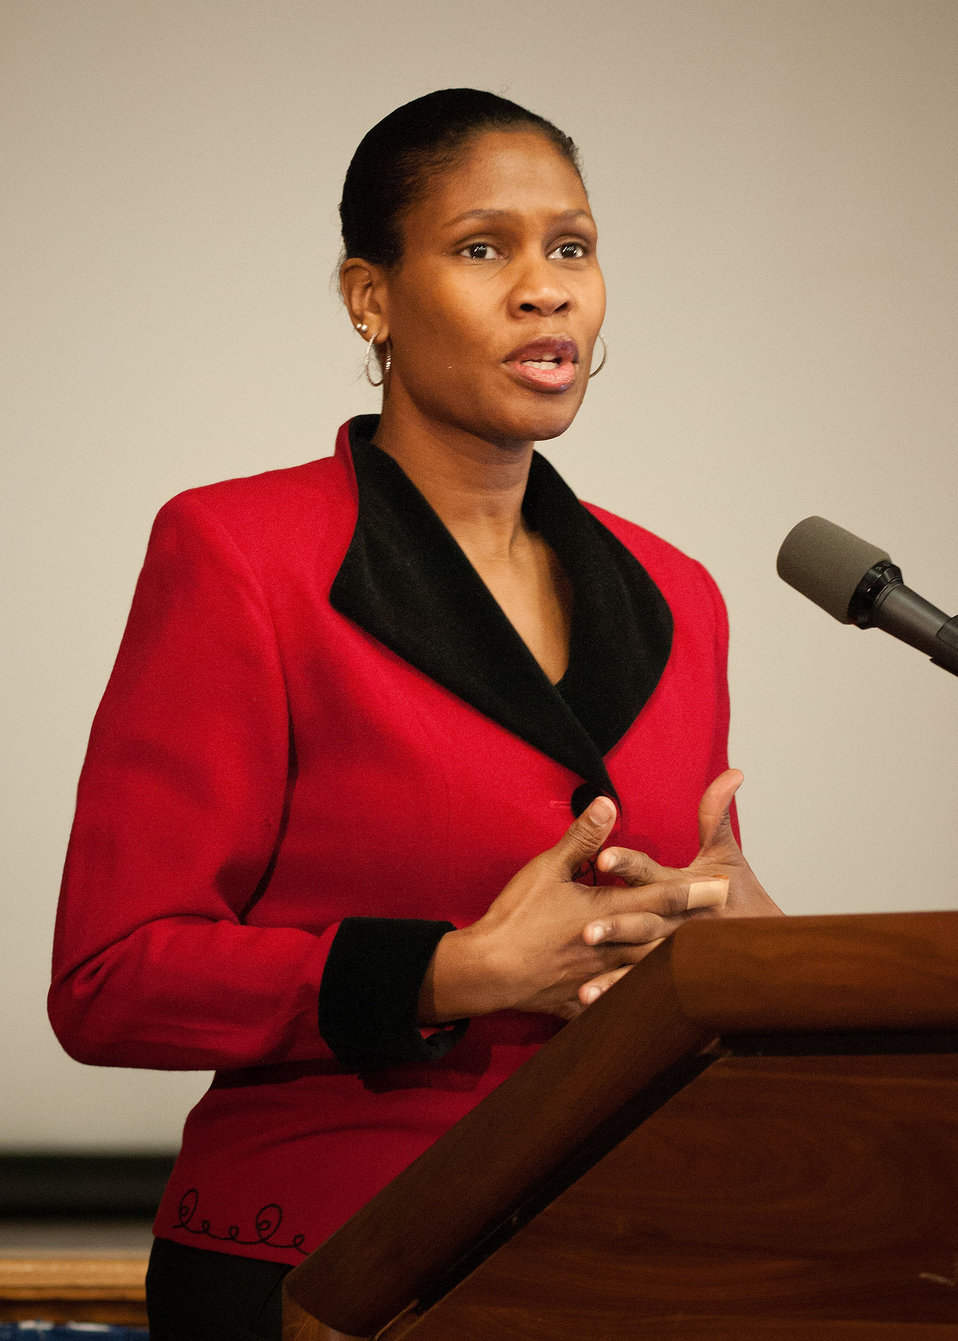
Agriculture Office of Communications Susan Carter is Mistress of Ceremonies at the U.S. Department of Agriculture’s (USDA) Fourth Annual Cultural Transformation event hel in Washington, D.C. on Tuesday, De. 4, 2012. The theme for the event “Faces of Cultural Transformation” Focusing on changing the way we serve our customers and cultural transformation’s benefits to employees.